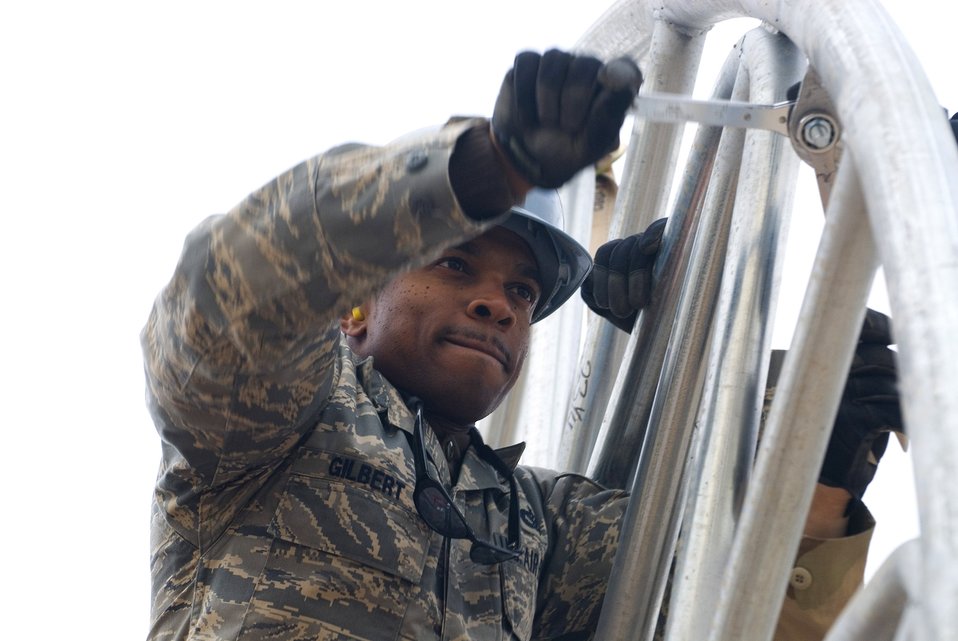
Raise the roof

Staff Sgt. Andy Gilbert tightens a support beam to the frame of a temporary shelter Dec. 5 at Balad Air Base, Iraq. The new shelter will house vehicles for the 332nd Expeditionary Civil Engineer Squadron Explosive Ordnance Disposal Flight. Sergeant Gilbert, a 332nd ECES structural technician, is deployed from Yokota Air Base, Japan.